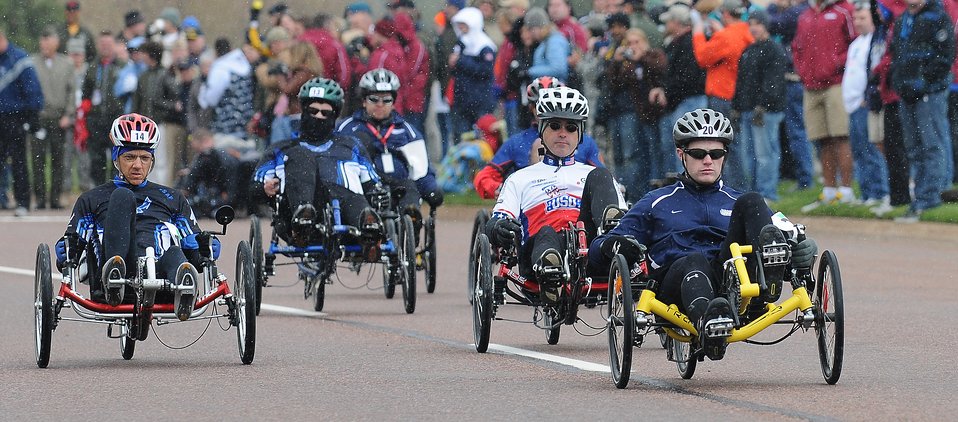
Warrior Games cycling events

Mike Bell of the Coast Guard and Senior Master Sgt. Michael Sanders of the Air Force lead the pack during the Warrior Games' recumbent bicycle 10k May 13, 2010, at the Air Force Academy in Colorado Springs, Colo. Sanders smoked the competition, finishing in 24:03 to win gold. The Marines' Angel Gomes took silver with 30:07, and Bell earned the bronze with a time of 30:08.